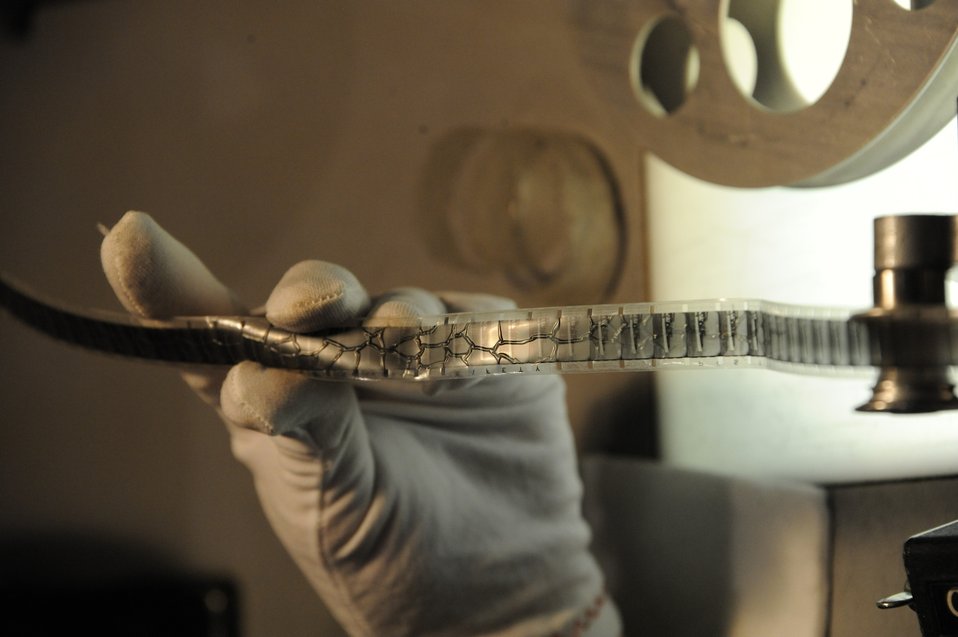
Audrey Amidon showing a close-up of acetate film in an advanced state of vinegar syndrome. The film base has shrunk more than the emulsion causing the wrinkly surface you see here.; Location: Archives 2 - Motion Picture Preservation Lab, College Park, MD